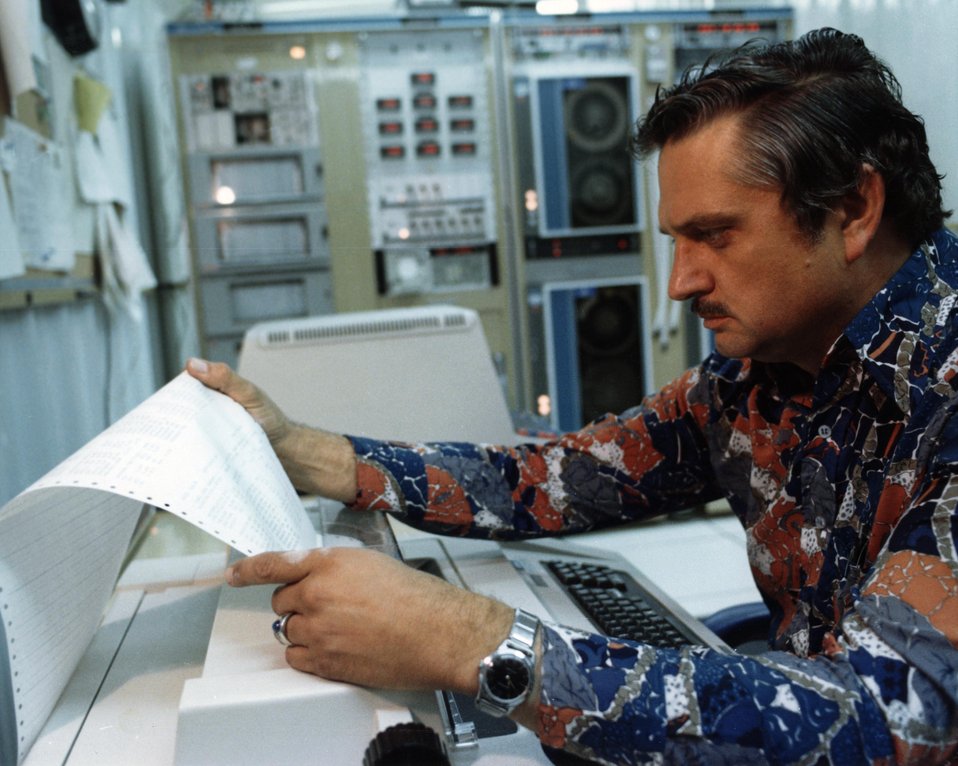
TECHNICIAN IS CHECKING DATA ON COMPUTER READ-OUT AT THE WIPP STUDY SITE WEATHER STATION.

THE WASTE ISOLATION PILOT PLANT IS A DOE RESEARCH AND DEVELOPMENT FACILITY FOR DEMONSTRATING THE SAFE DISPOSAL OF TRANSURANIC RADIOACTIVE WASTES. TEST SHAFTS HAVE BEEN DRILLED TO A DEPTH OF 2,100 FEET. THE SHAFTS, ONE 6 FEET IN DIAMETER AND THE OTHER 12 FEET IN DIAMETER, PROVIDE AN ENTRY PASSAGE AND VENTILATION TO THE UNDERGROUND SALT ROCK FORMATION THAT IS BEING TESTED TO DETERMINE ITS SUITABILITY FOR RADIOACTIVE WASTE STORAGE.